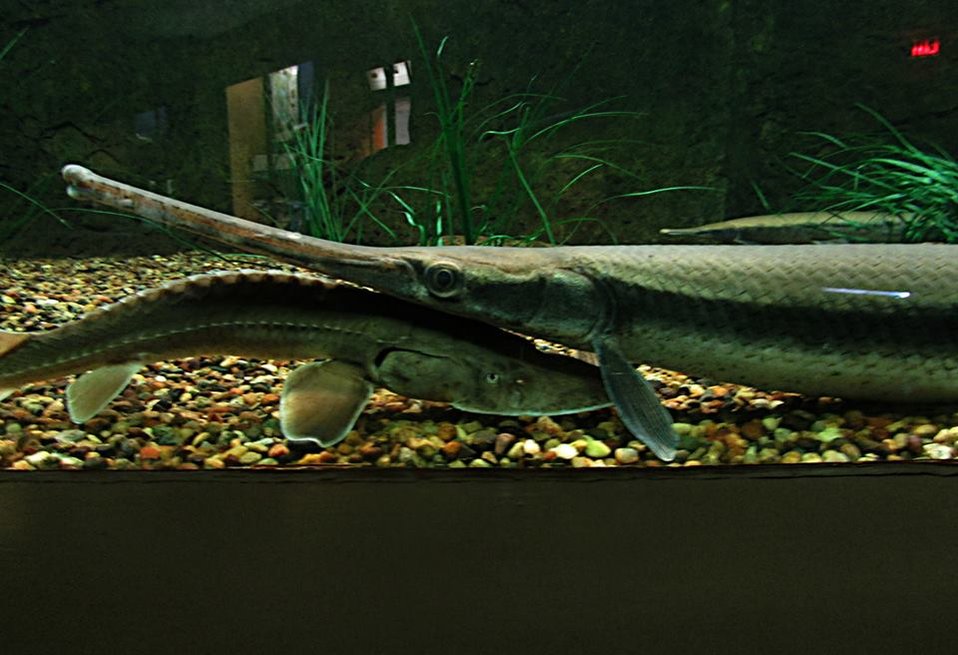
Friends

These two dinosaurs were getting pretty friendly this morning! In about two months when the aquarium reopens, this gar and sturgeon will be here waiting to see you.